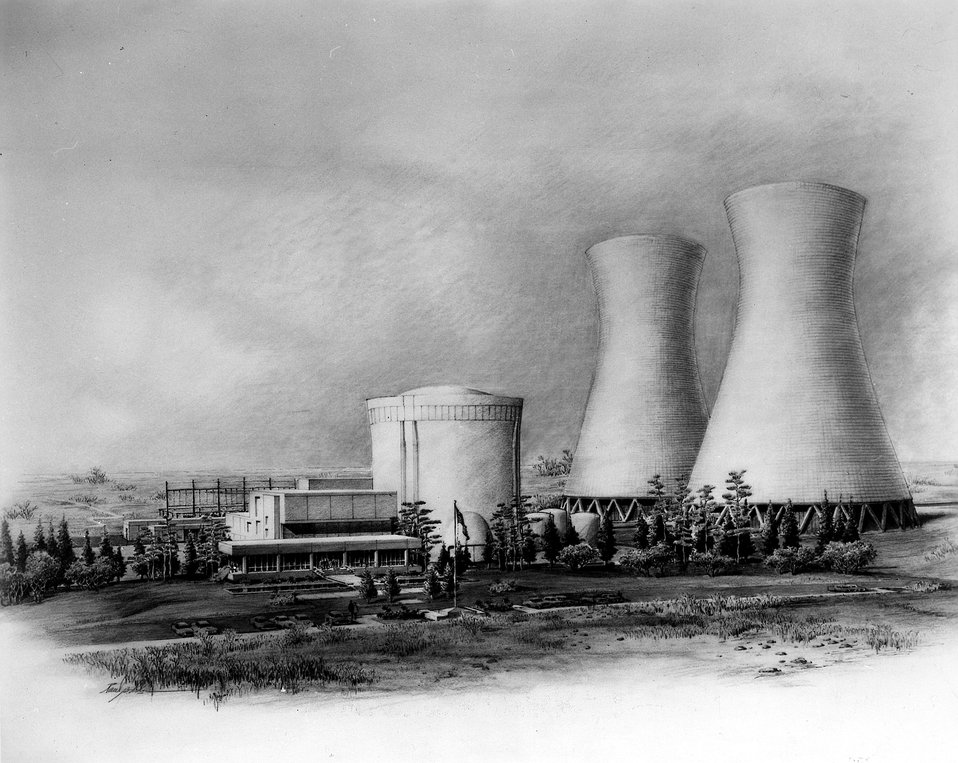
Water Cooling Towers, standing taller than a 17-story building, will mark the site of the Sacramento Municipal Utility District's (SMUD) $200 million Rancho Seco nuclear electricity generating station when the plant-- shown in this artist's conception-- begins operation in mid-1973 near Ione, California. Circa 1970.